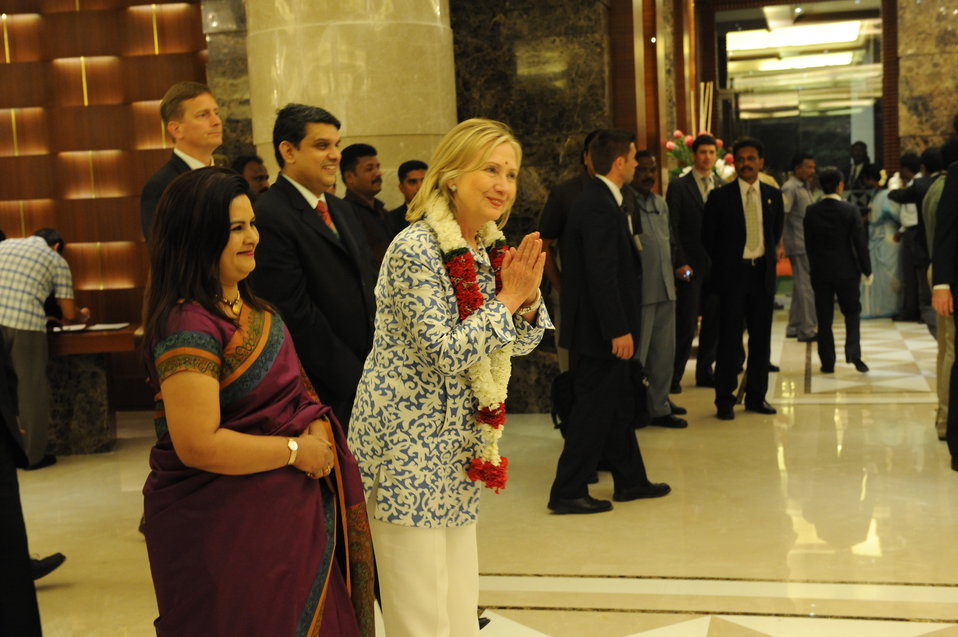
Secretary Clinton Is Greeted By Taj Coromandel Employees

U.S. Secretary of State Hillary Rodham Clinton is greeted by employees at the Taj Coromandel with a traditional greeting in Chennai, India, on July 20, 2011. [Paul Cohn/ State Department photo]